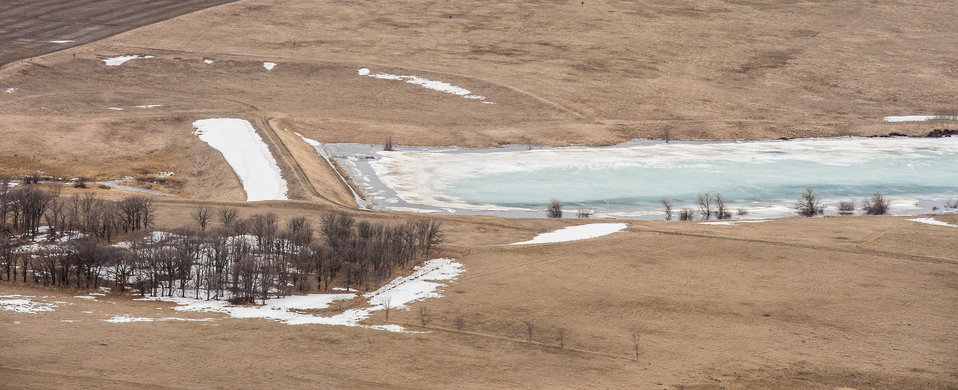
Tongue River Watershed dam T-2-2, Weiler Dam, in Pembina County, ND, part of the Red River basin, on Wednesday, May 1, 2013. To learn about the Red River Basin Initiative, see www.mn.nrcs.usda.gov/news/features13/RRBI.html.